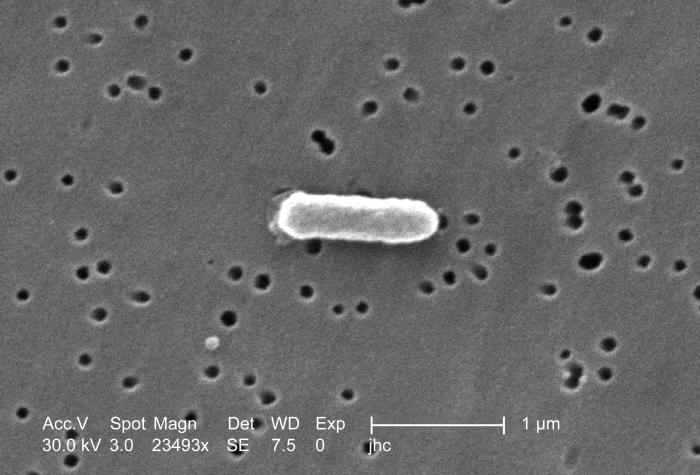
Magnified 23,493x, this scanning electron micrograph (SEM) depicted a highly enlarged view of a Ralstonia mannitolilytica bacterium, which was harvested from a pure culture.